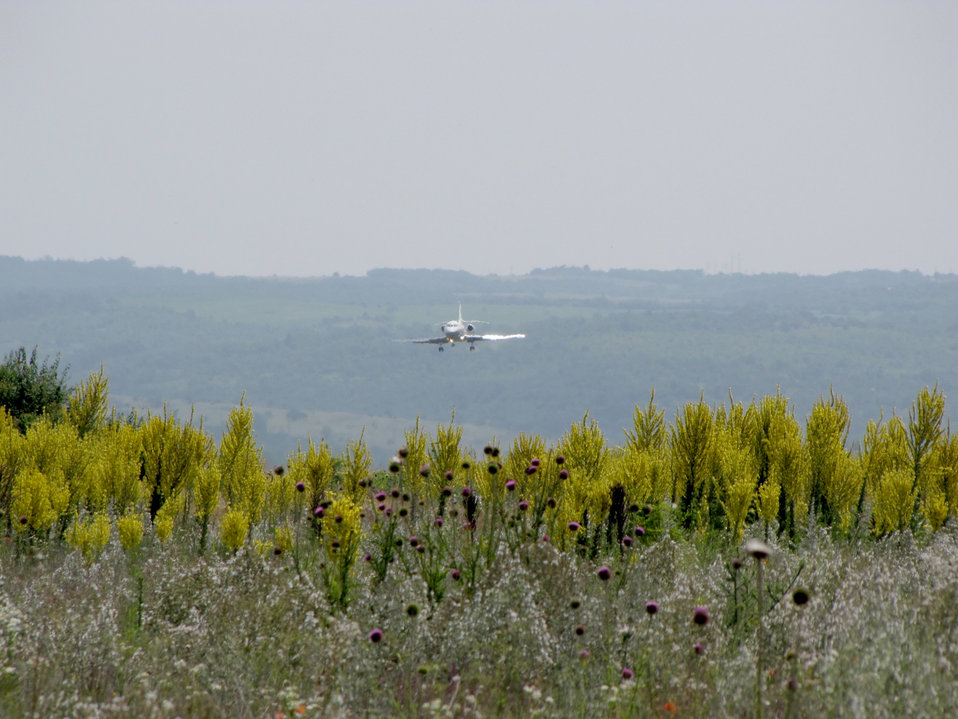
Bulgarian TACAN

A Bulgarian aircraft approaches the runway in June at Dolna Mitropolia Air Base, Bulgaria. There, an Electronic Systems Center and contractor team completed a foreign military sales project that provided a tactical air navigation system to the Bulgarian air force.